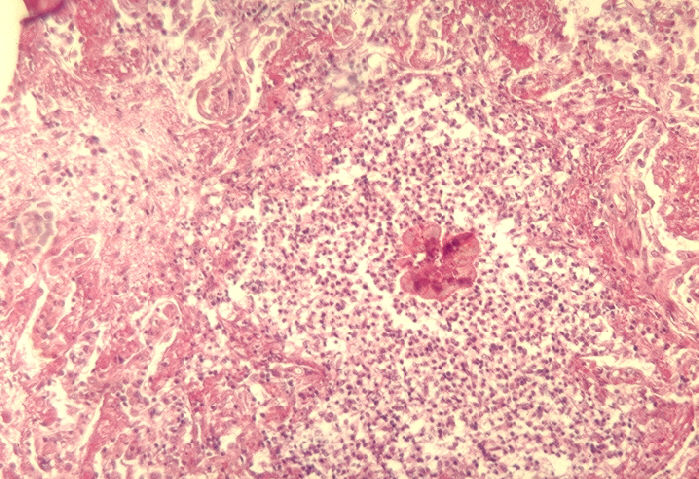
Histopathology of botryomycosis, lung.